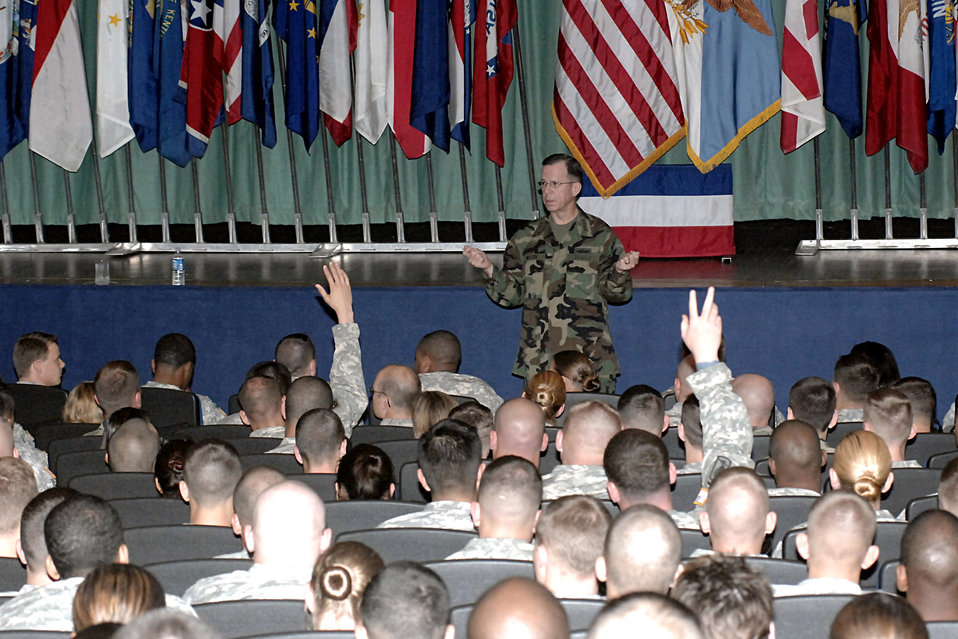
Chairman of Joint Chiefs visits Pope

Adm. Mike Mullen, chairman of the Joint Chiefs of Staff, speaks to Pope Air Force Base Airmen and Fort Bragg Soldiers March 31 at the Pope theatre. Admiral Mullen was there to tour the two installations and visit with servicemembers.